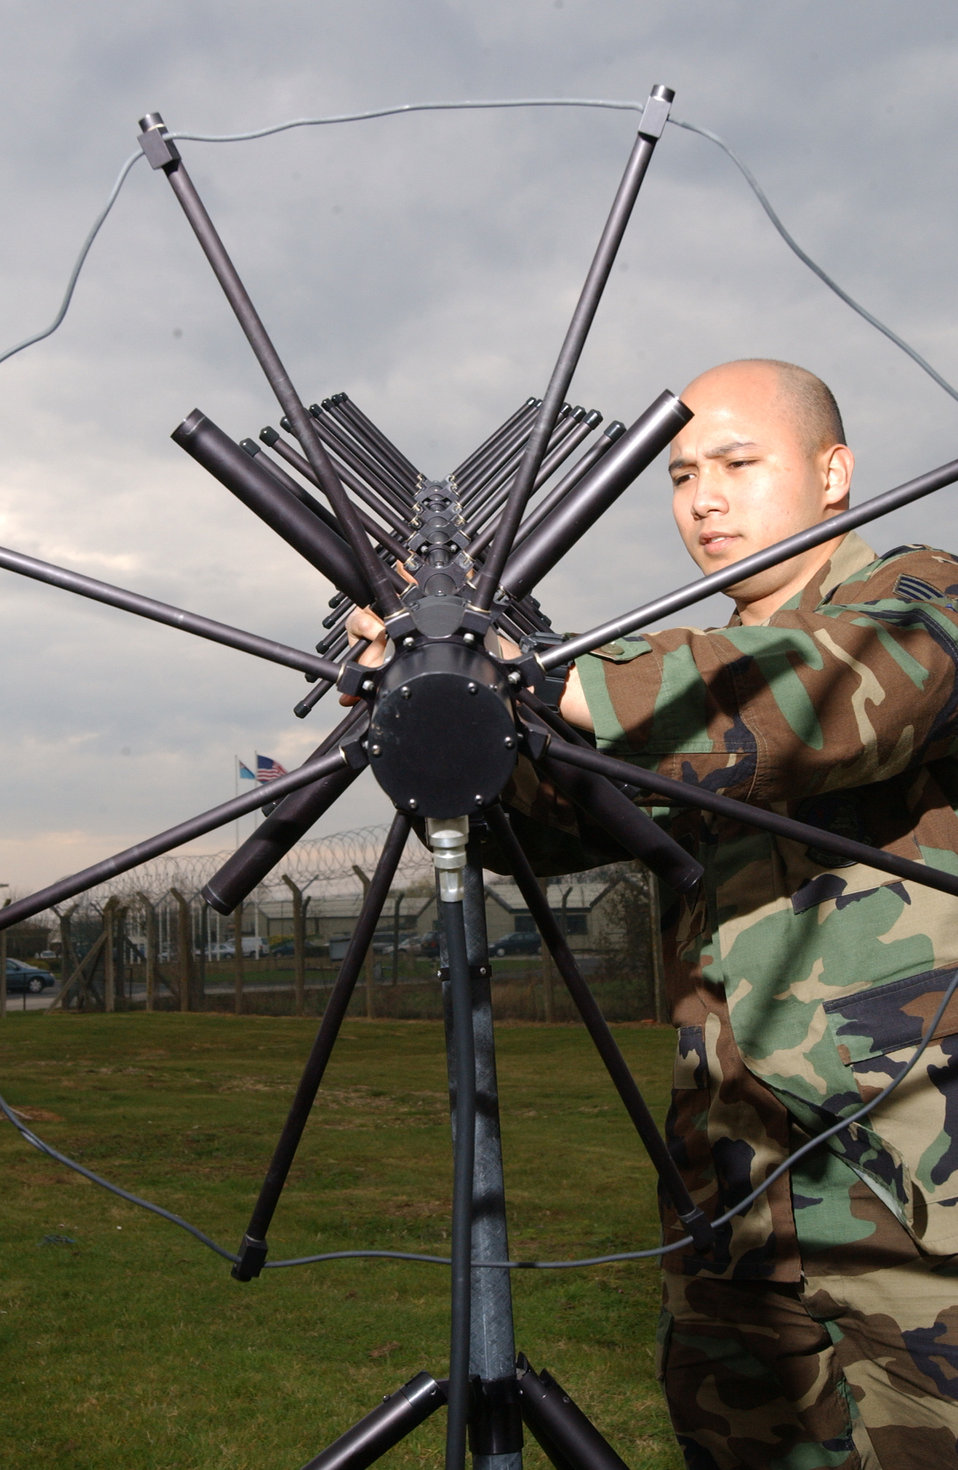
Satellite radio

ROYAL AIR FORCE MILDENHALL, England -- Senior Airman Charles Cruz sets up a PSC-5 tactical satellite radio here April 1. The PSC-5 supports the Department of Defense requirement for a lightweight, secure, network-capable, multi-band, multi-mission, anti-jam, voice/imagery/data communications capability. Airman Cruz is assinged to the 100th Communications Squadron.